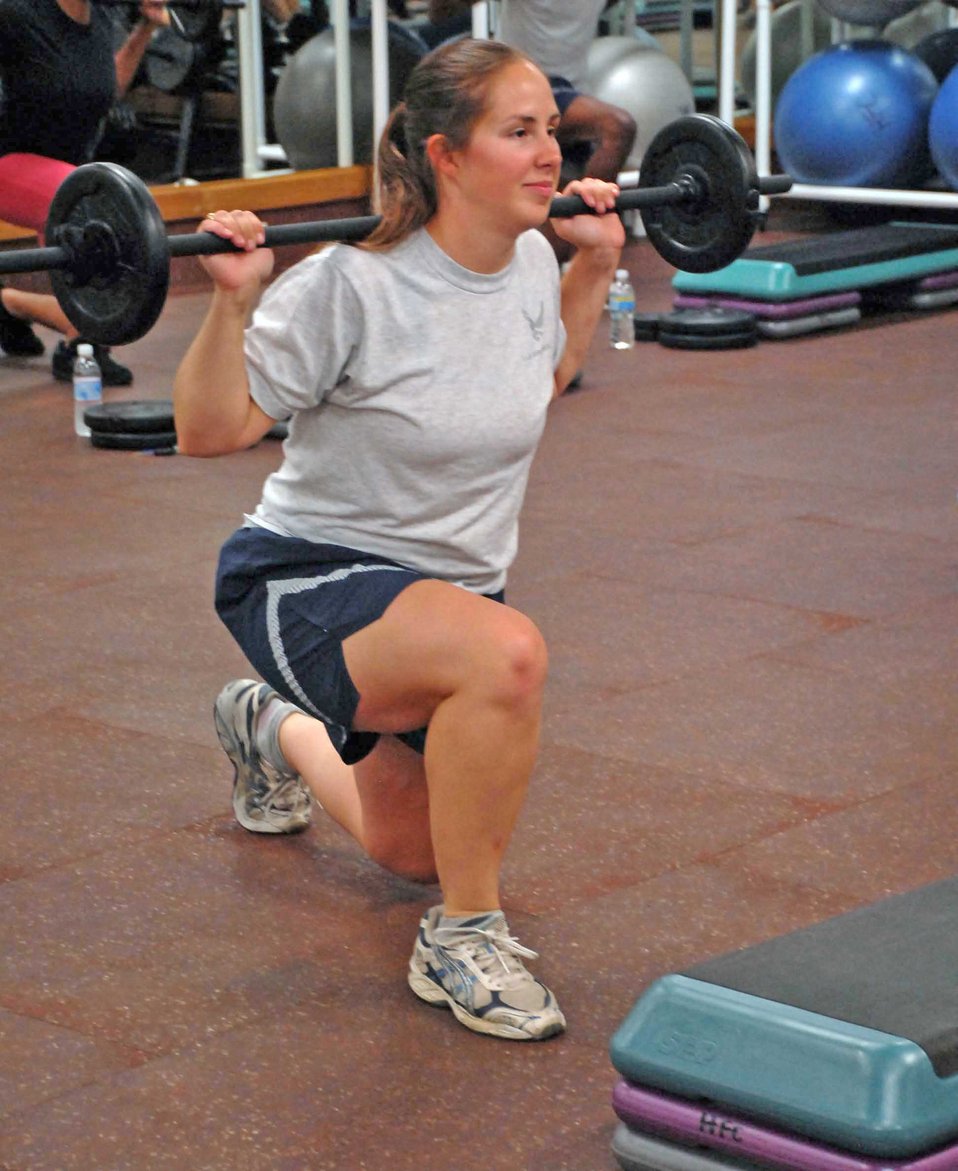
Beale AFB first to incorporate Body Pump in fitness program

Second Lt. Melissa Croy does lunges during a workout Aug. 17, 2009, at the fitness center at Beale Air Force Base, Calif. Lieutenant Croy is one of the certified instructors for the new Body Pump program recently implemented to promote fitness at Beale.